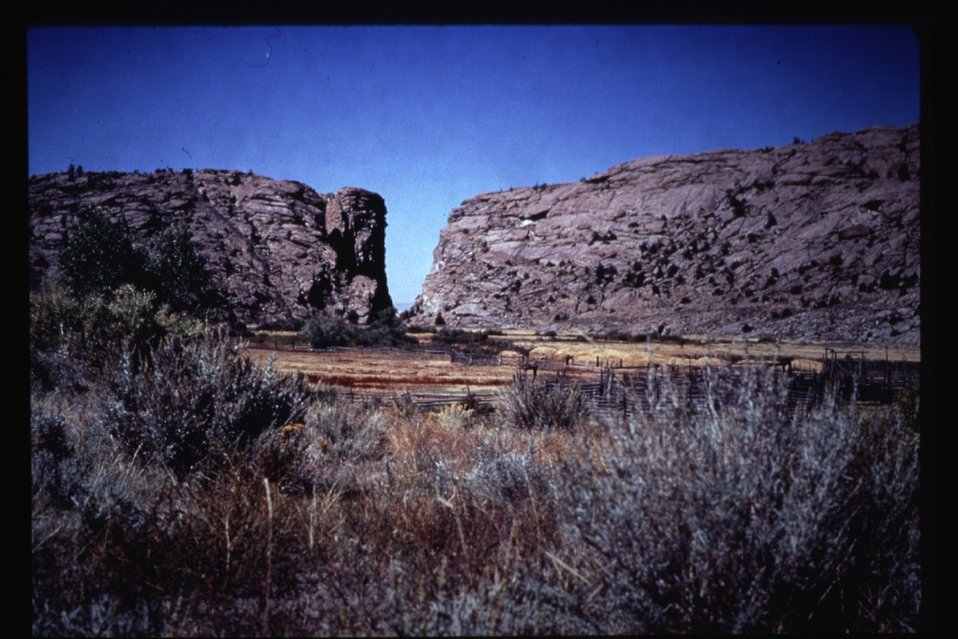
Oregon Trail USRD Upper Snake River District